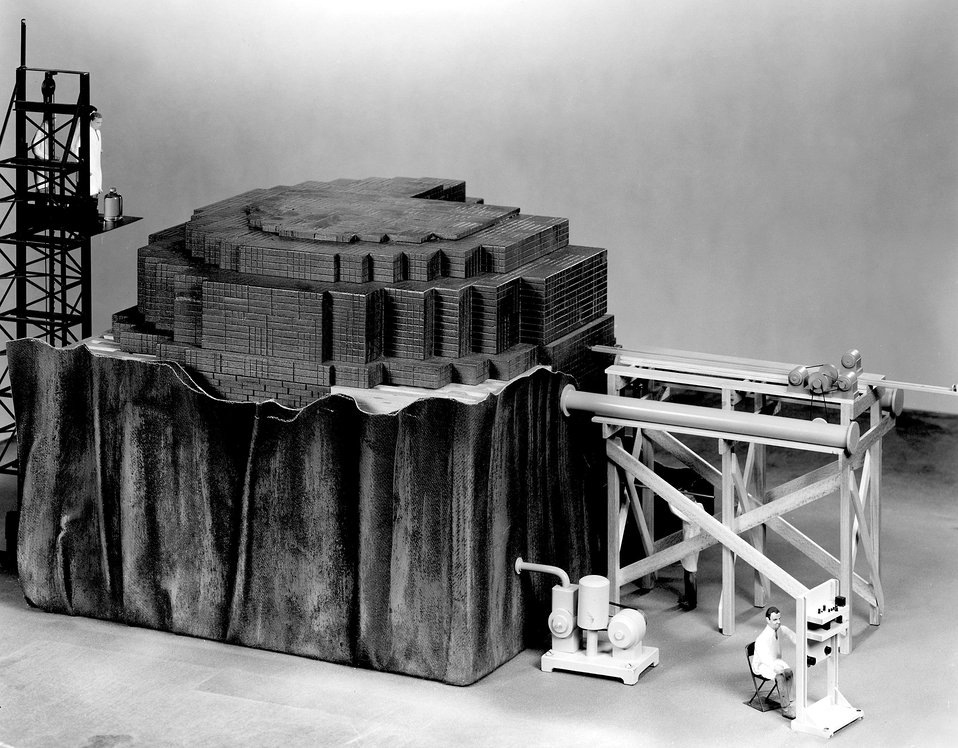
Closeup of scale model (1/2 in. = 1 ft.) of CP-1 reactor temporarily removed from its West Stands racquets court environment..